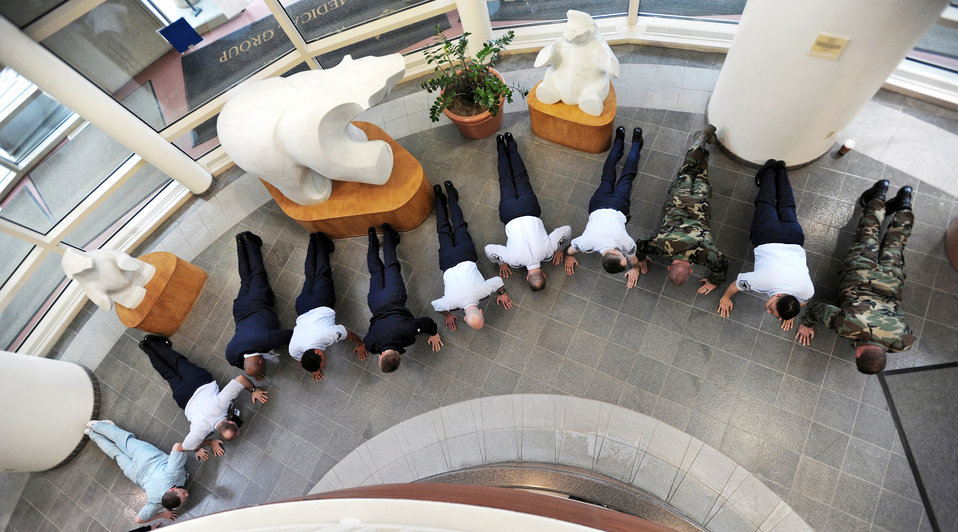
Elmendorf Airmen complete million push-up challenge

Airmen do push-ups in the lobby of the base hospital for the 100-day million push-up challenge March 29, 2010, at Elmendorf Air Force Base, Alaska. In an attempt to improve physical training scores and unit camaraderie, 425 Airmen did 1,184,957 push-ups in 100 days.